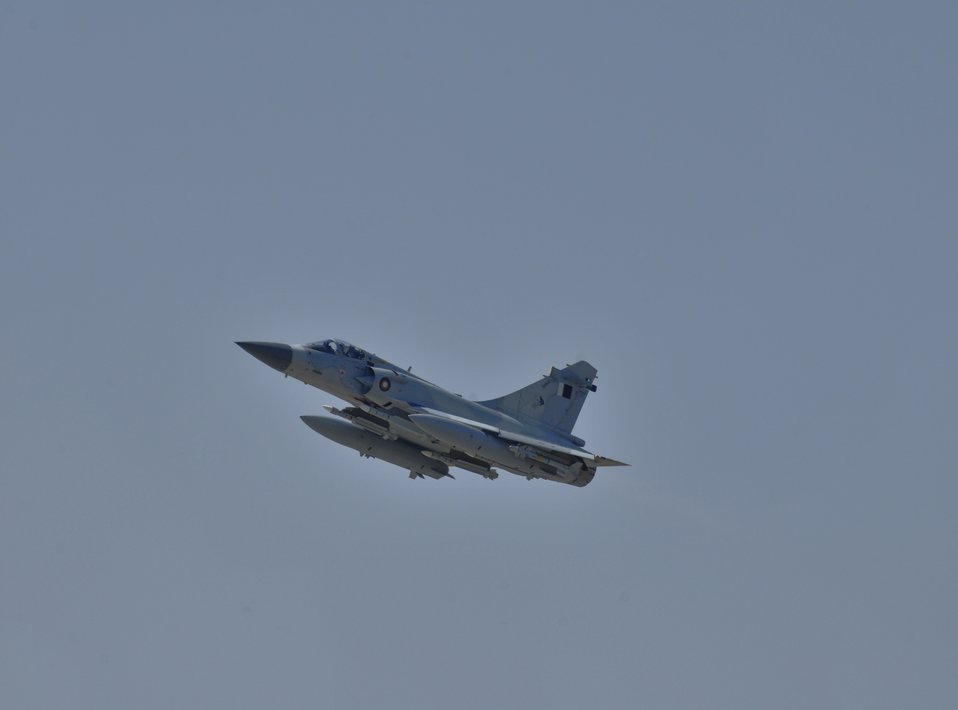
New coalition member flies Operation Odyssey Dawn mission

A Qatar Emiri Air Force Mirage 2000-5 flies its first mission March 25, 2011, in support of Operation Odyssey Dawn. Qatar is the newest member of the coalition supporting the no-fly zone over Libya.